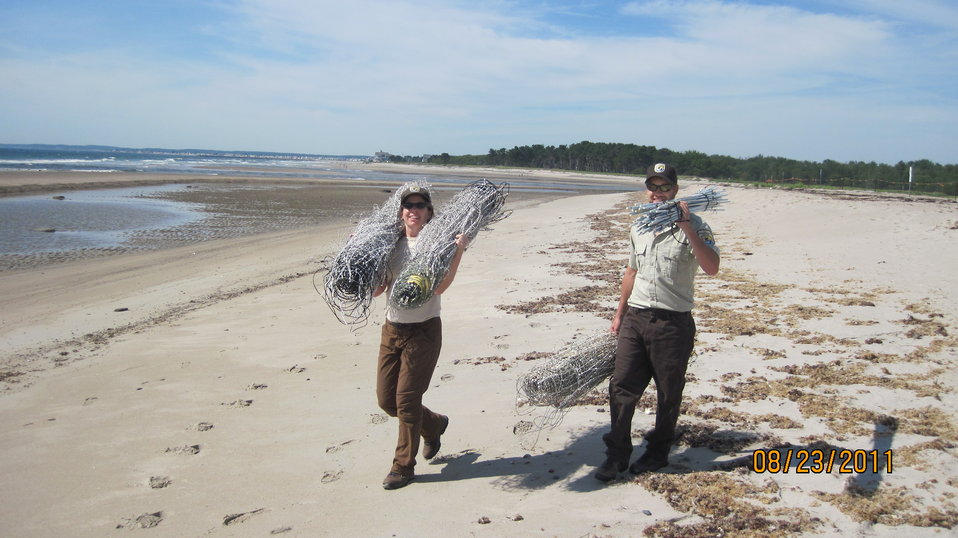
Getting ready

Preparing for Hurricane Irene at Rachel Carson National Wildlife Refuge in Maine.